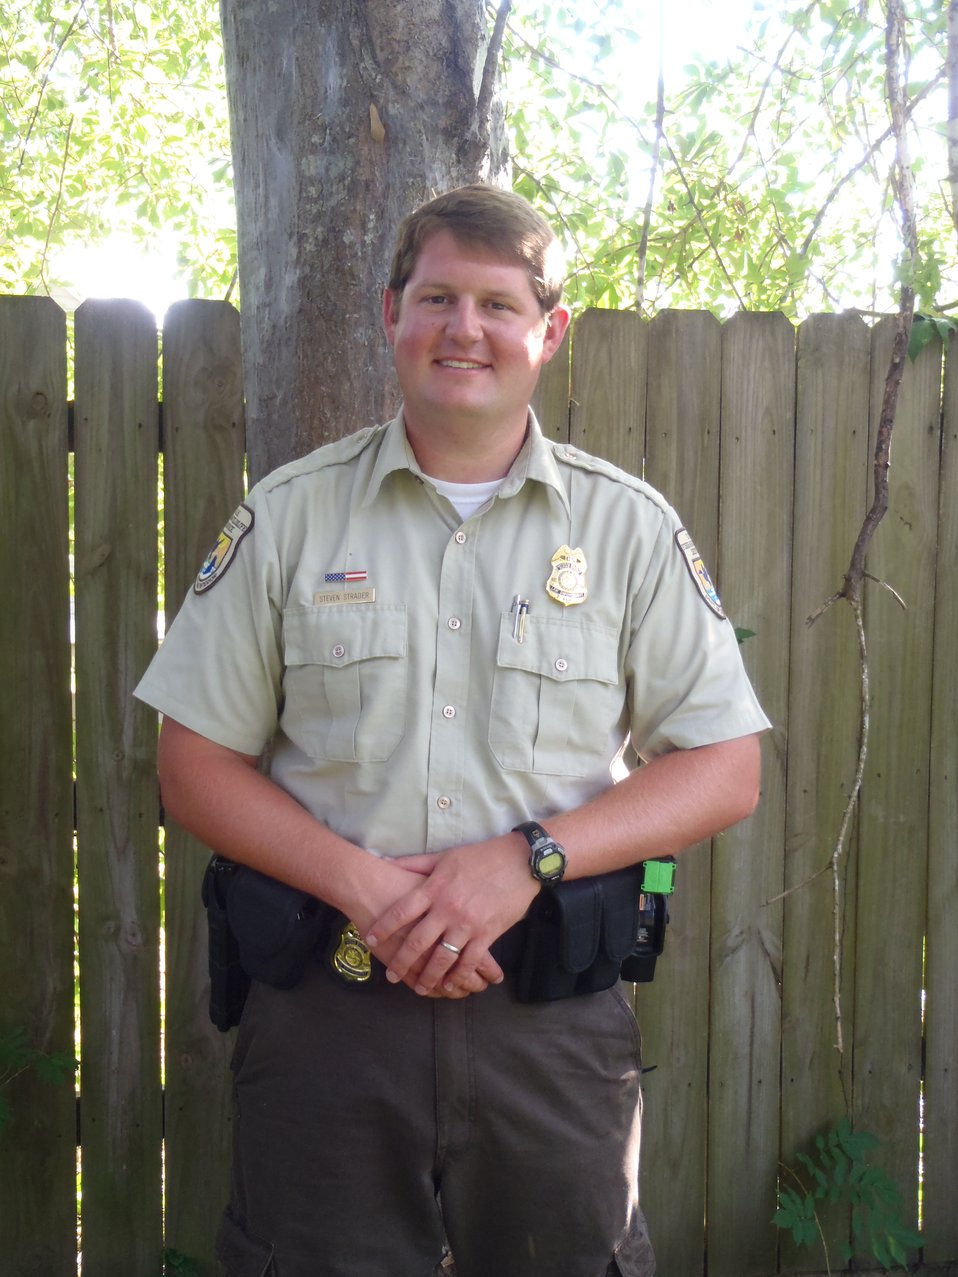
Officer Steven Strader

Steve Strader, a wildlife officer at Bayou Sauvage National Wildlife Refuge and seven other refuges in Louisiana, credits his father, bird biologist Bob Strader, for instilling the conservation values that led to his career.